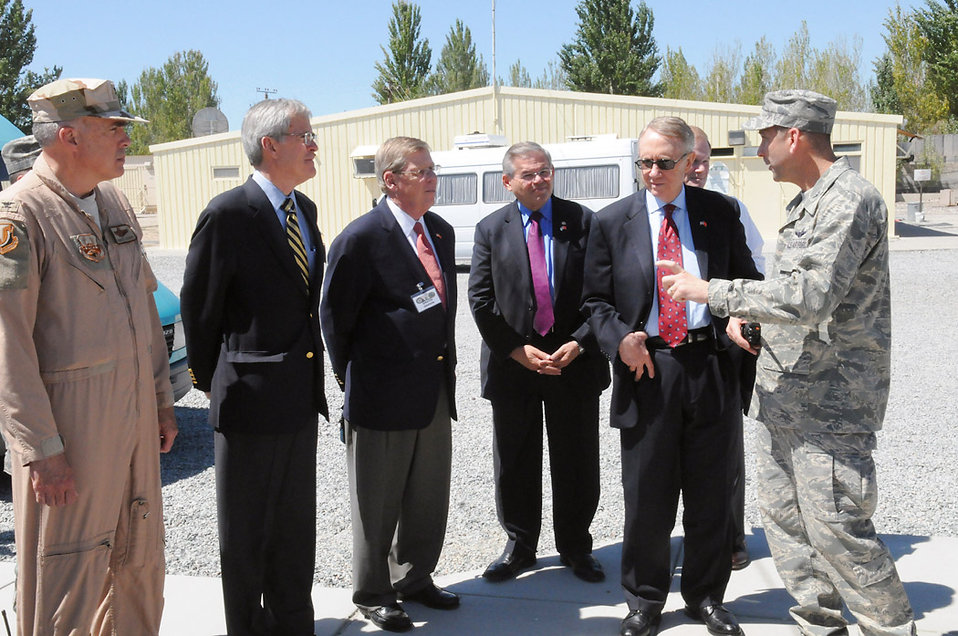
Congressmen visit servicemembers in Manas

Senators Jeff Bingaman, Johnny Isakson, Robert Menendez, Harry Reid and Bill Nelson are briefed by Col. Christopher Bence, 376th Air Expeditionary Wing commander, about the wing's mission as an air mobility hub supporting operations in Afghanistan. The senators visited the base Aug. 5 as a part of an eight-day congressional delegation trip to promote security, democracy and development in central Asia. While at Manas, the senators met with deployed Airmen and learned about the missions they carry out.